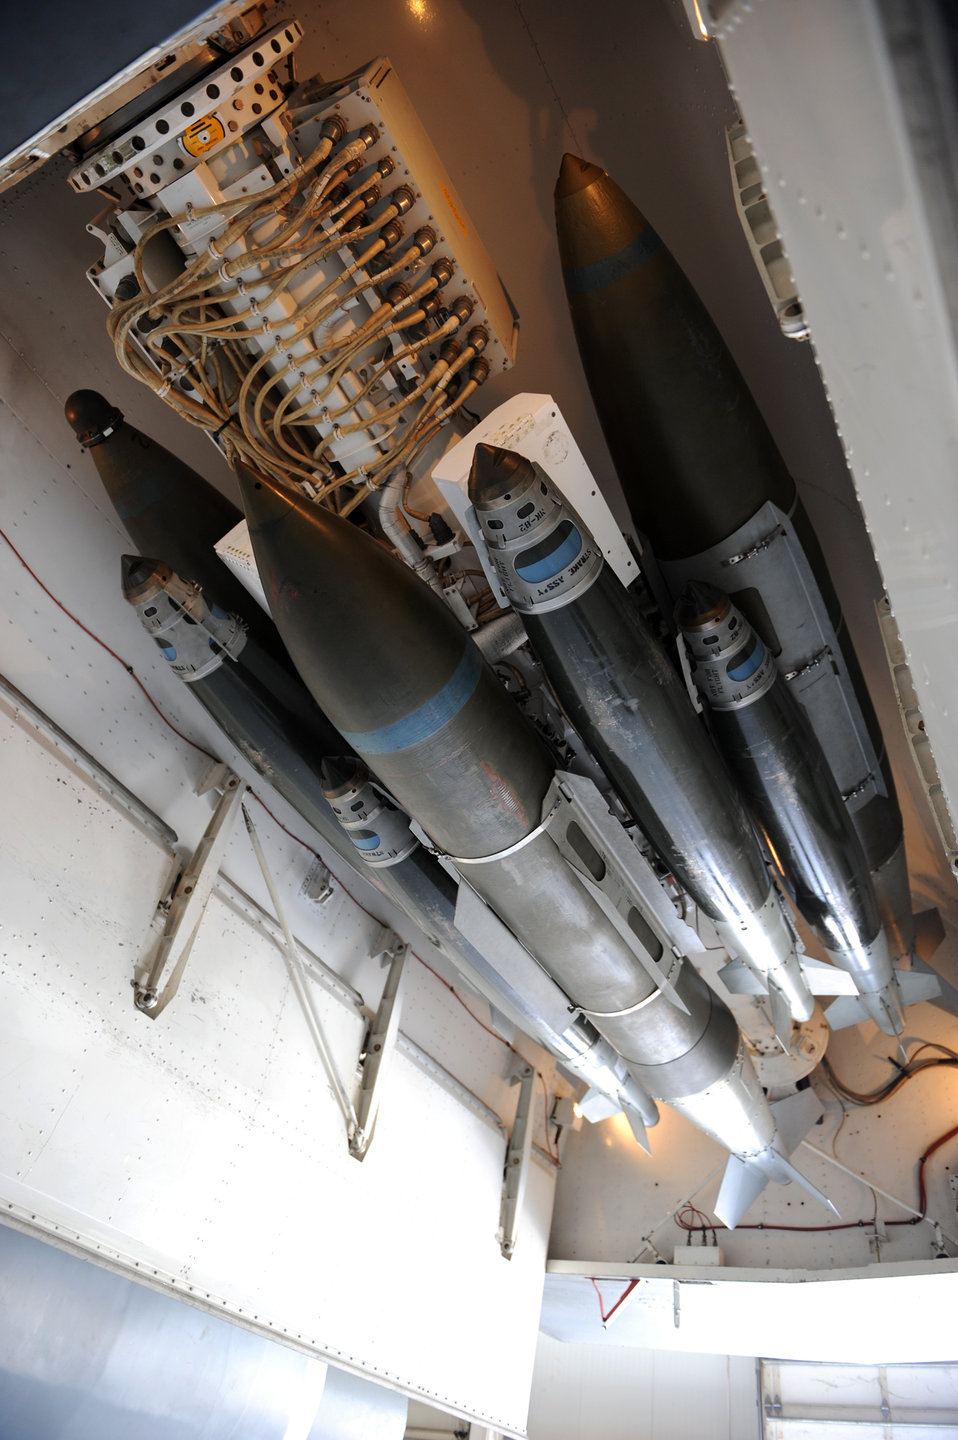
B1-B Lancer upgrade will triple payload

An assortment of 500-pound and 2,000-pound joint direct attack munitions are connected to a multiple ejector rack on a B-1B Lancer March 31, 2011, at a weapons load barn at Dyess Air Force Base, Texas. If fielded, a 16-carry modified rotary launcher will increase the number of 500-pound JDAMs and laser-guided JDAMs carried by a B-1B from 15 to 48, a 320 percent increase in capability.